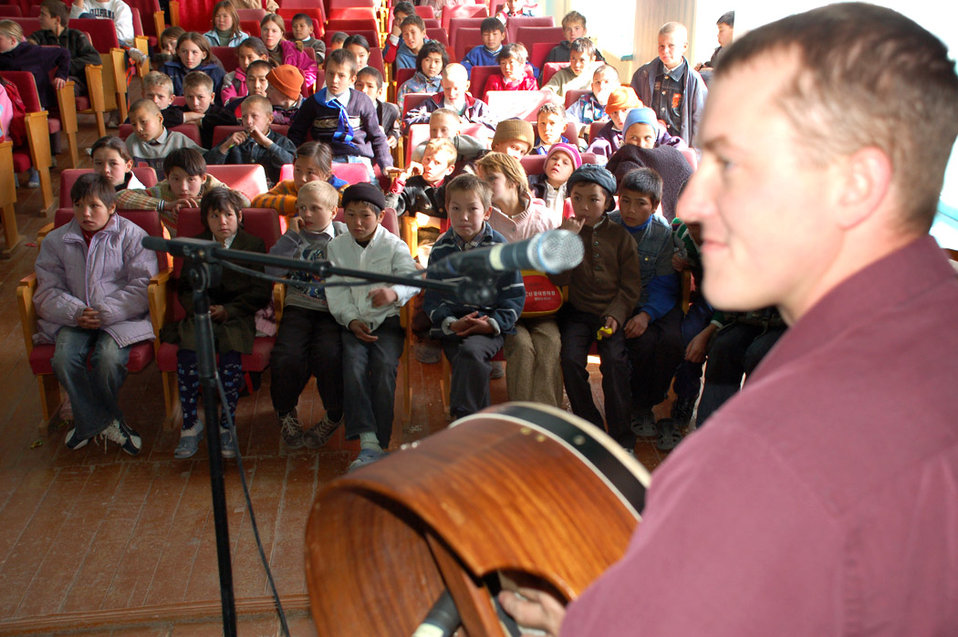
Airmen visit Tok Mok orphanage

Airman 1st Class Brandon Richard, U.S. Central Air Forces Band, the Desert Ramblers, plays a song to the children at the Tok Mok II Orphanage near Manas Air Base, Kyrgyzstan, Oct. 29.